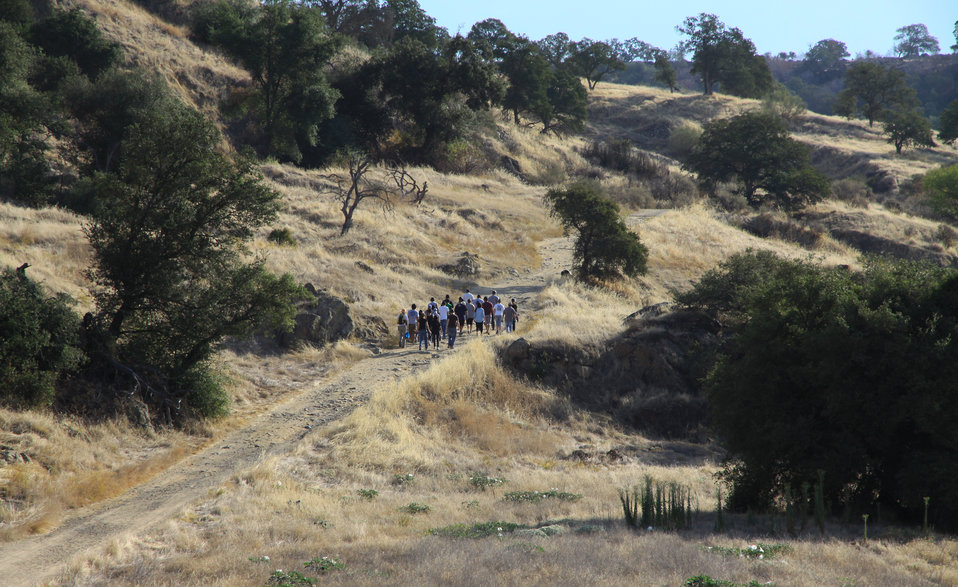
National Public Lands Day at Stanislaus River Parks

Volunteers help with trail maintenance at Stanislaus River Parks near Oakdale, Calif., Sept. 24 in celebration of National Public Lands Day. Stanislaus was one of seven U.S. Army Corps of Engineers Sacramento District recreation parks that participated in the event.